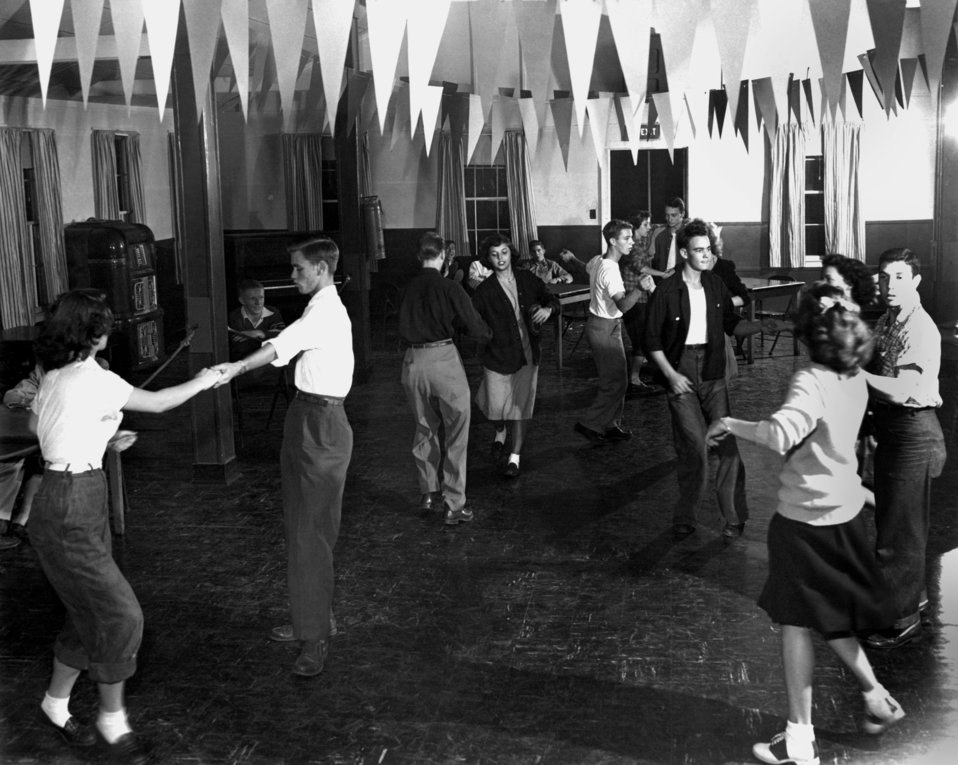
Teen Dance Oak Ridge 1945

MED DOE photo Ed Westcott 1945 Oak Ridge Tennessee